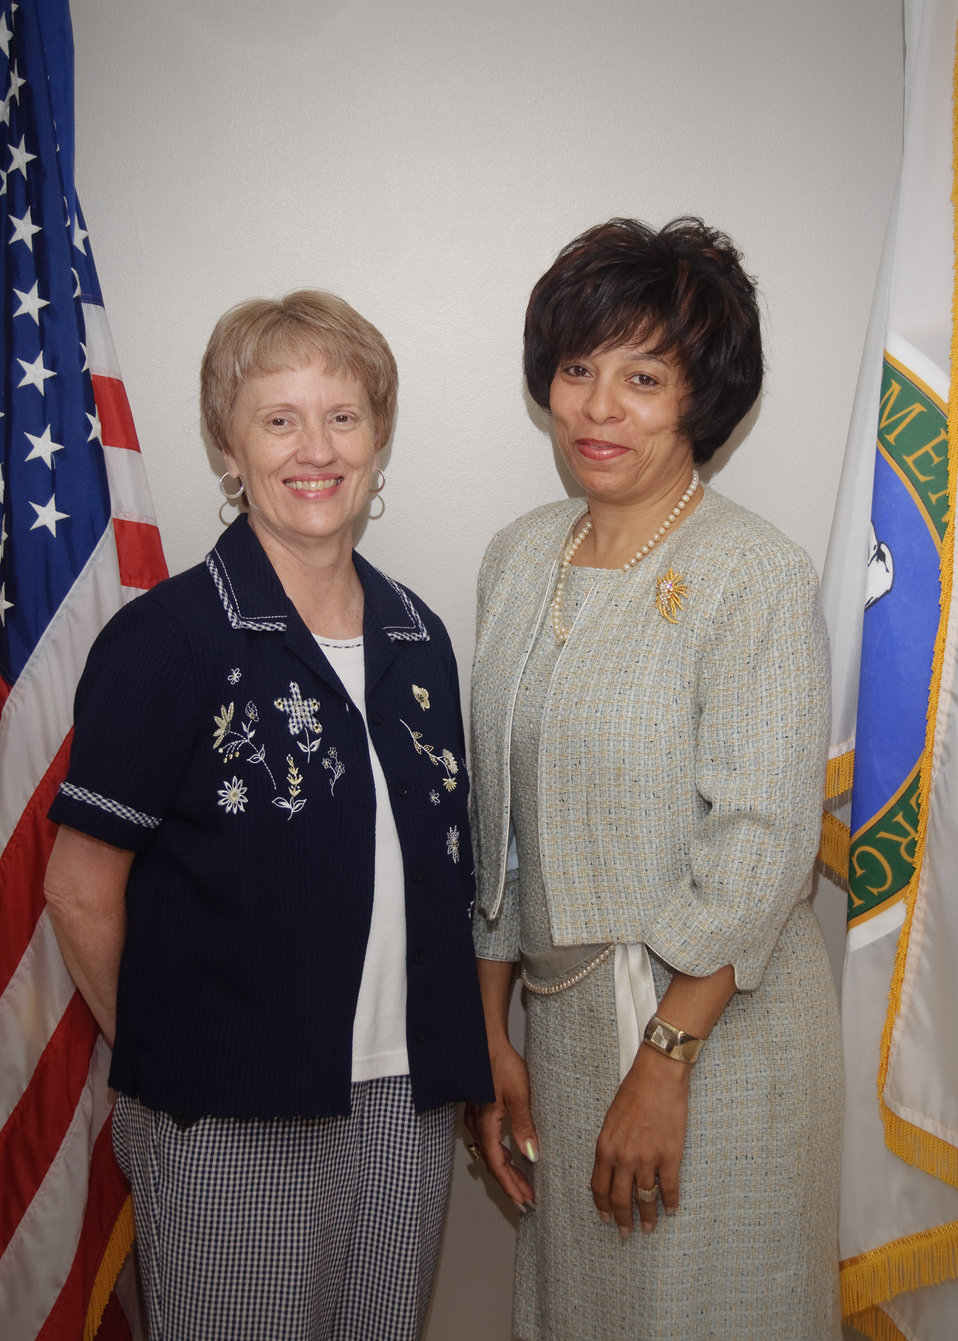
Savannah River Site Federal Employees Volunteer for United Way Campaign

June 2012 - Savannah River Operations Office Federal employees, Jean Stump (left) and Teressa Butler have volunteered to assist the upcoming CSRA and Aiken United Way Campaigns.